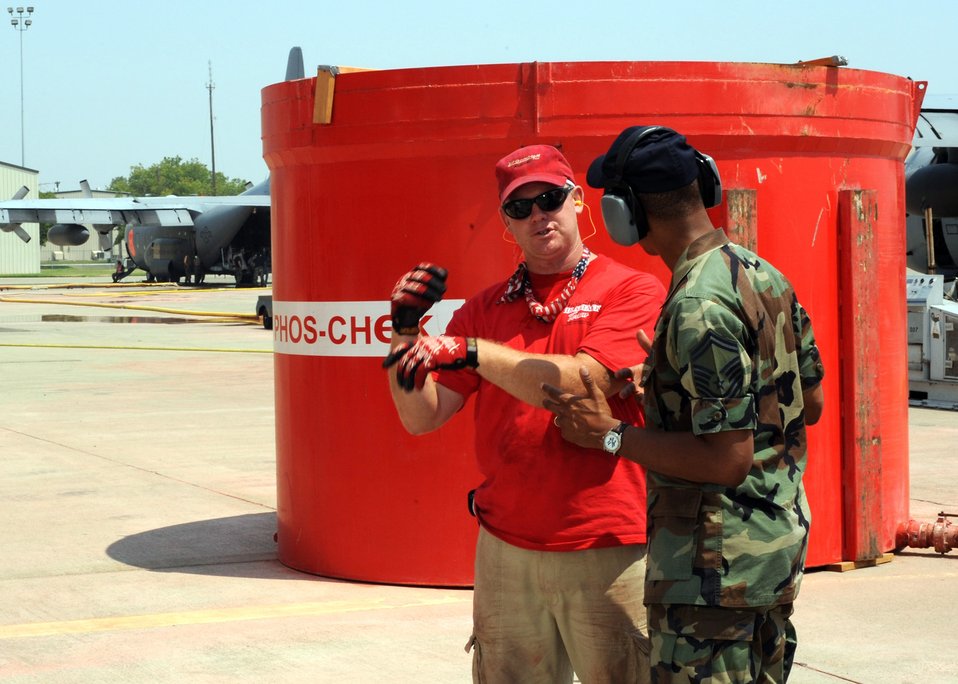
MAFFS 'safety man' keeps people, environment safe

Senior Master Sgt. Aaron Smith discusses fire retardant reloading operations with a civilian representative from the retardant supply company at McClellan Airfield, Calif., July 8. Sergeant Smith is assigned to the 153rd Airlift Wing of the Wyoming Air National Guard.